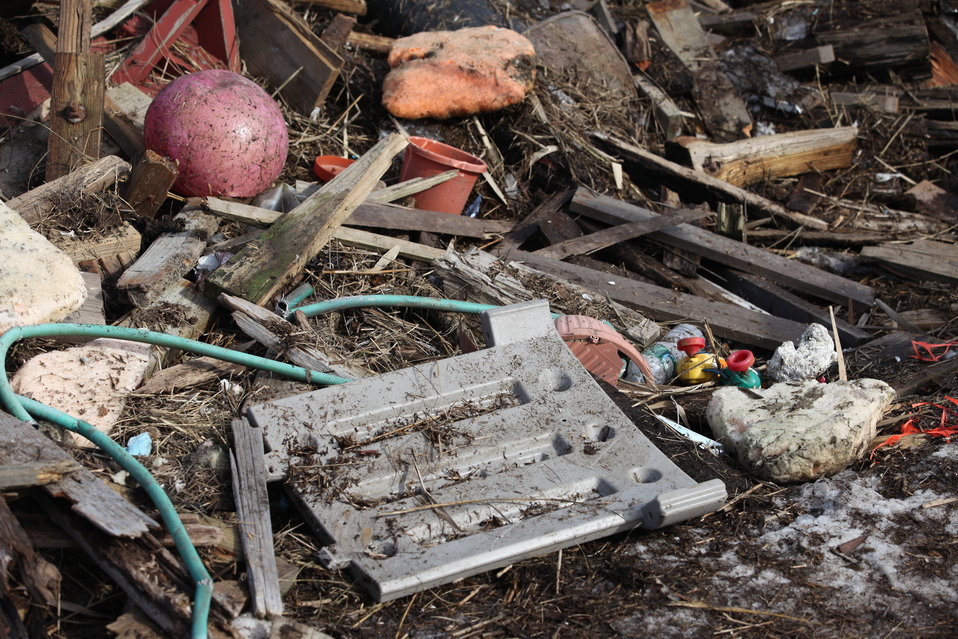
Debris at Lido Beach WMA